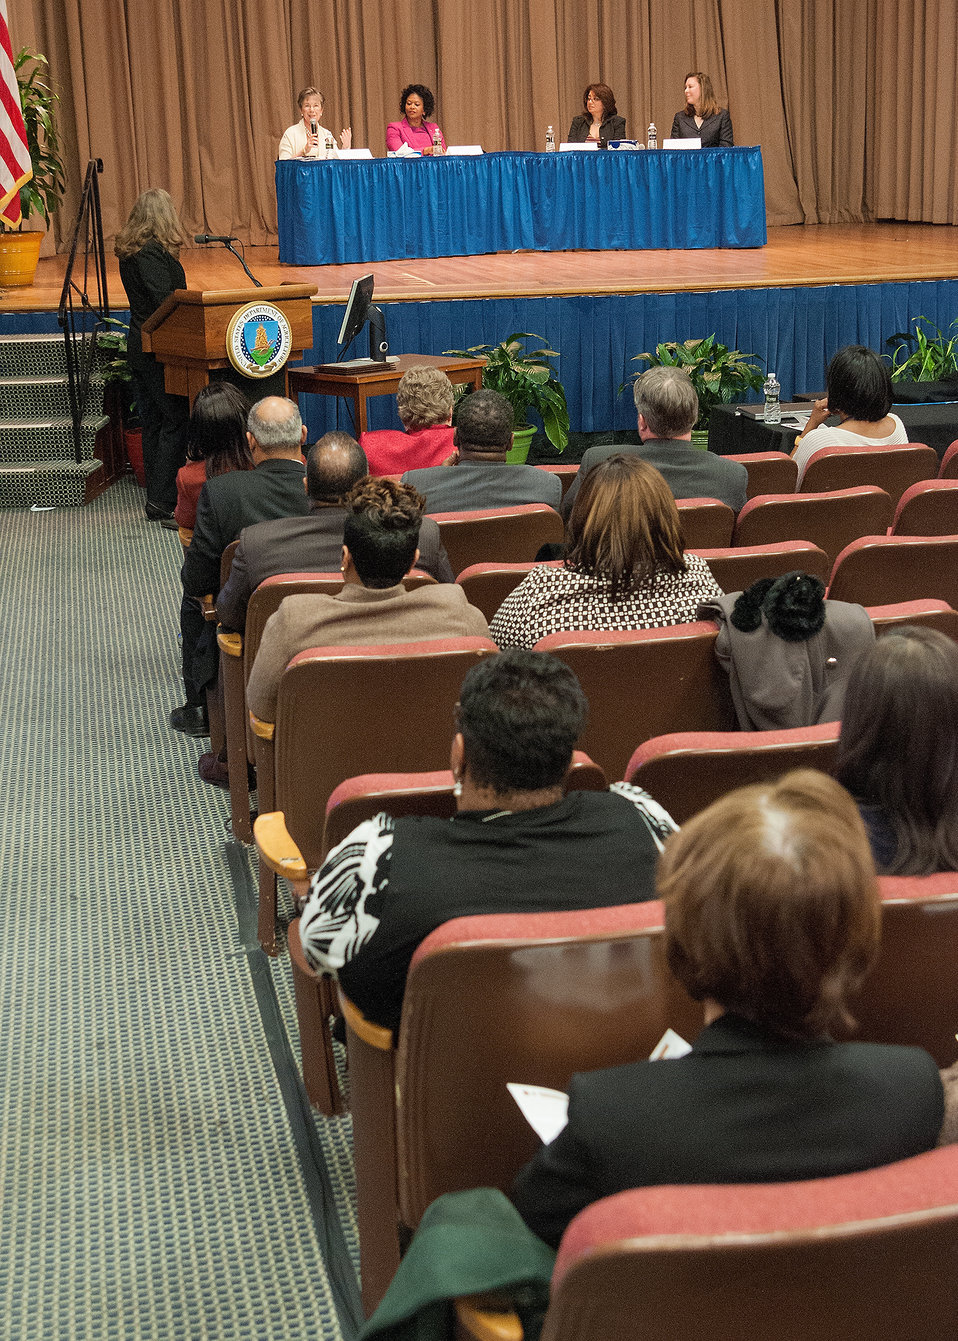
(L to R) Agriculture Under Secretary, Research, Education and Economics (REE) Dr. Katherine Wotecki, U.S. Department of Agriculture (USDA) Associate Chief Information Officer (Technology) Ms. Yvonne Jackson, USDA Rural Development (RD) Rural Utilities Service (Engineering) Assistant Administrator Ms. Nivin Elgohary, and USDA Associate Chief Financial Officer (Mathematics) Ms. Kim Farington chair a panel during the USDA ‘s Office of the Chief Information Officer (OCIO) National Women’s History Month celebration at the USDA Jefferson Auditorium in Washington, D.C. on Thursday, Mar. 14, 2013. The theme of this year’s celebration is, “Recognizing American Women’s Outstanding Contributions to the Field of Science, Technology, Engineering and Mathematics,” commonly referred to as STEM.